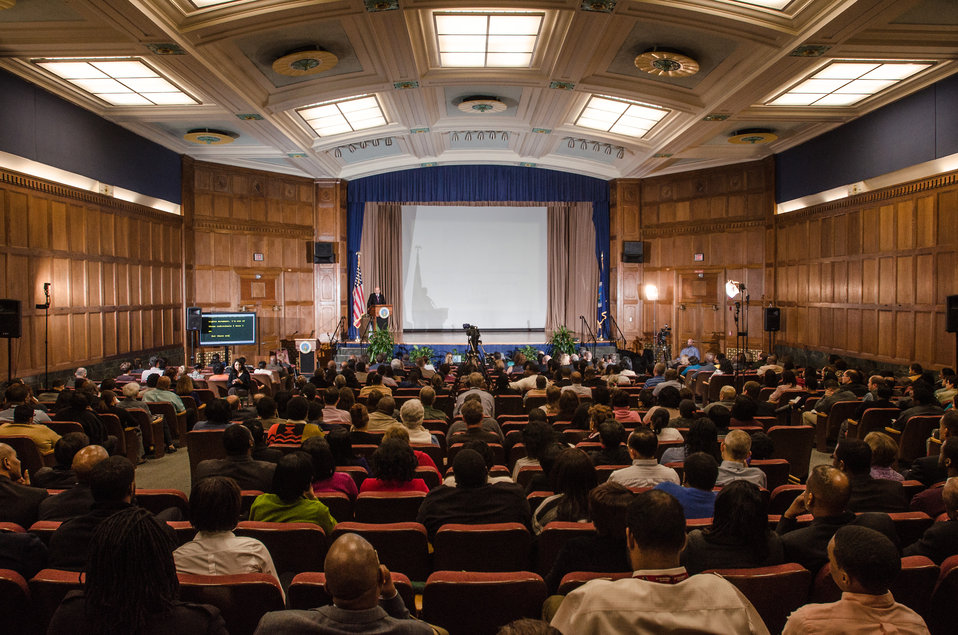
U.S. Department of Agriculture (USDA) Dr. Martin Luther King, Jr. National Service Day Drum Major for Service Awards at the USDA Jefferson Auditorium in Washington, D.C., on Tuesday, Jan. 15, 2013.